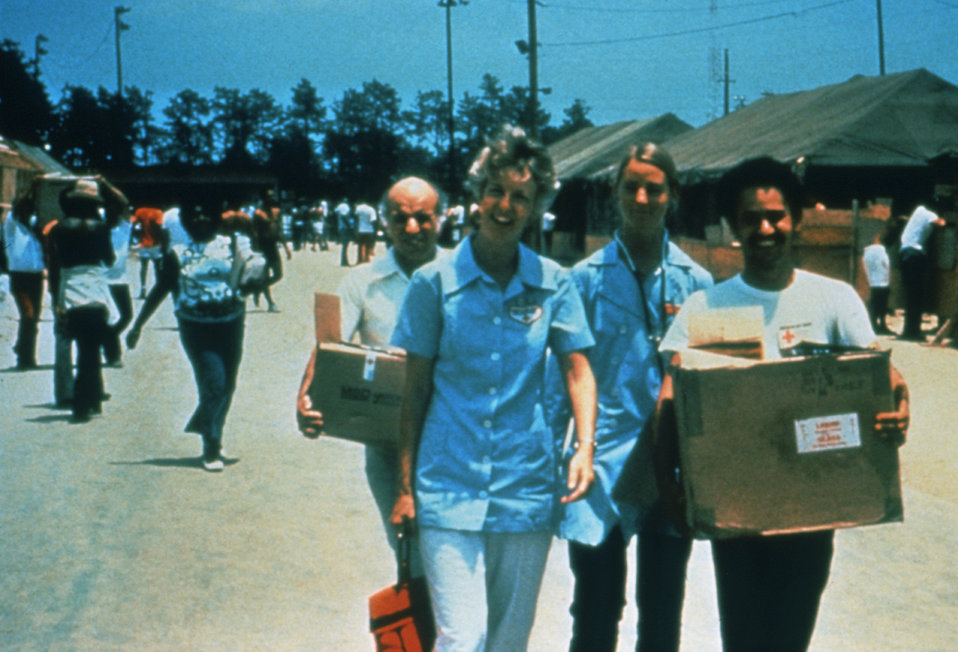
This photograph shows CDC field clinicians doing there part in preventing and controlling disease throughout the world.